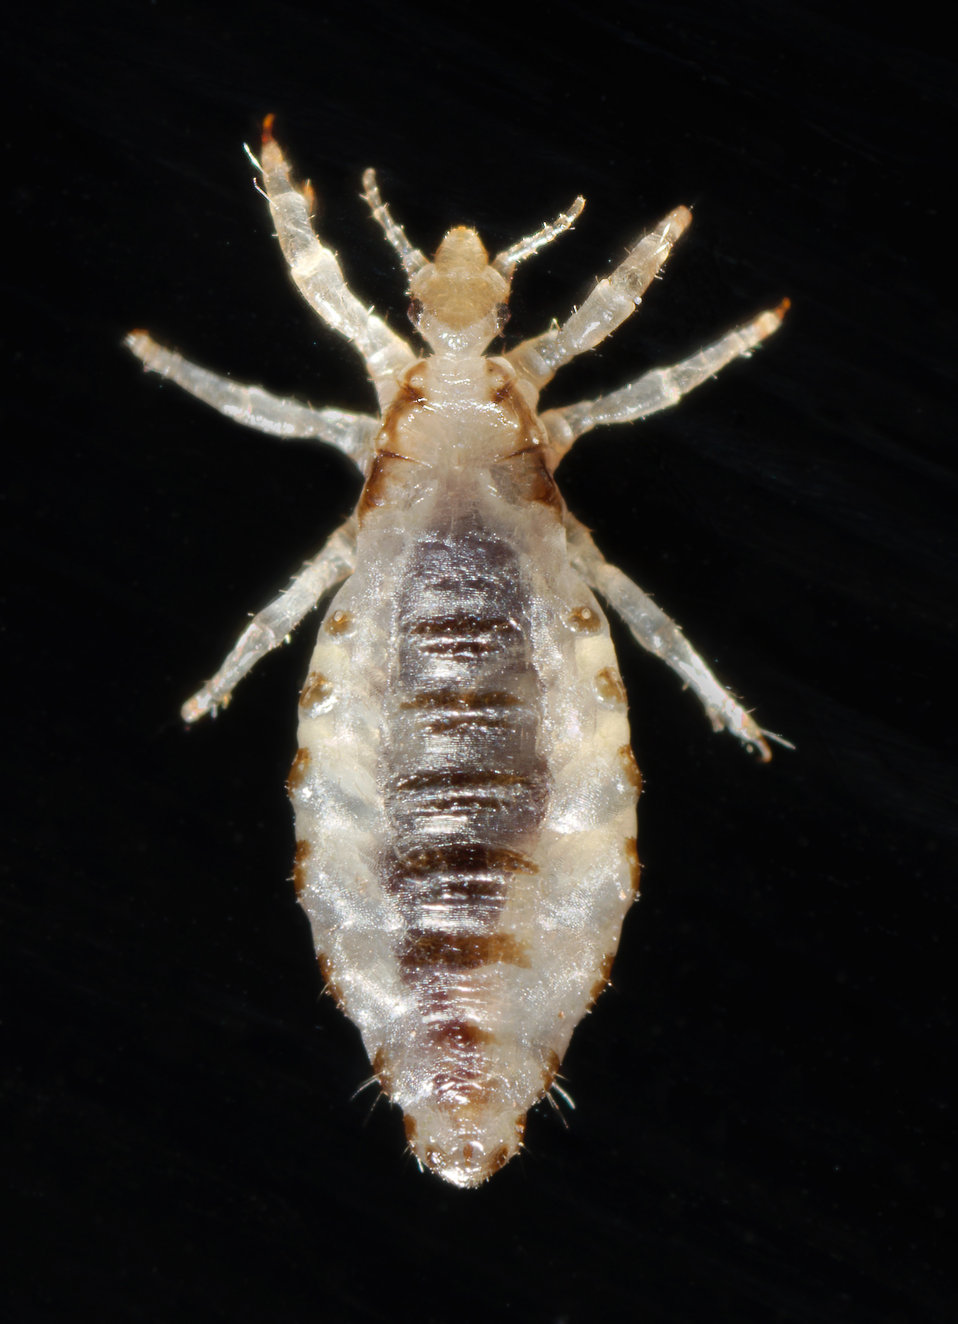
This 2006 photograph depicted a dorsal view of a male body louse, Pediculus humanus var. corporis. Some of the external morphologic features displayed by members of the genus Pediculus include an elongated abdominal region without any processes, and three pairs of legs, all equal in length and width. The distal tip of the male's abdomen is rounded, whereas, the female's (PHIL# 9202) is concave.Body lice are parasitic insects that live on the body, and in the clothing or bedding of infested humans. Infestation is common, found worldwide, and affects people of all races. Body lice infestations spread rapidly under crowded conditions where hygiene is poor, and there is frequent contact among people. Note the sensorial setae, or hairs that cover the louse's body, which pick up, and transmit information to the insect about changes in its environment such as temperature, and chemical queues. The dark mass inside the abdomen is a previously ingested blood meal.